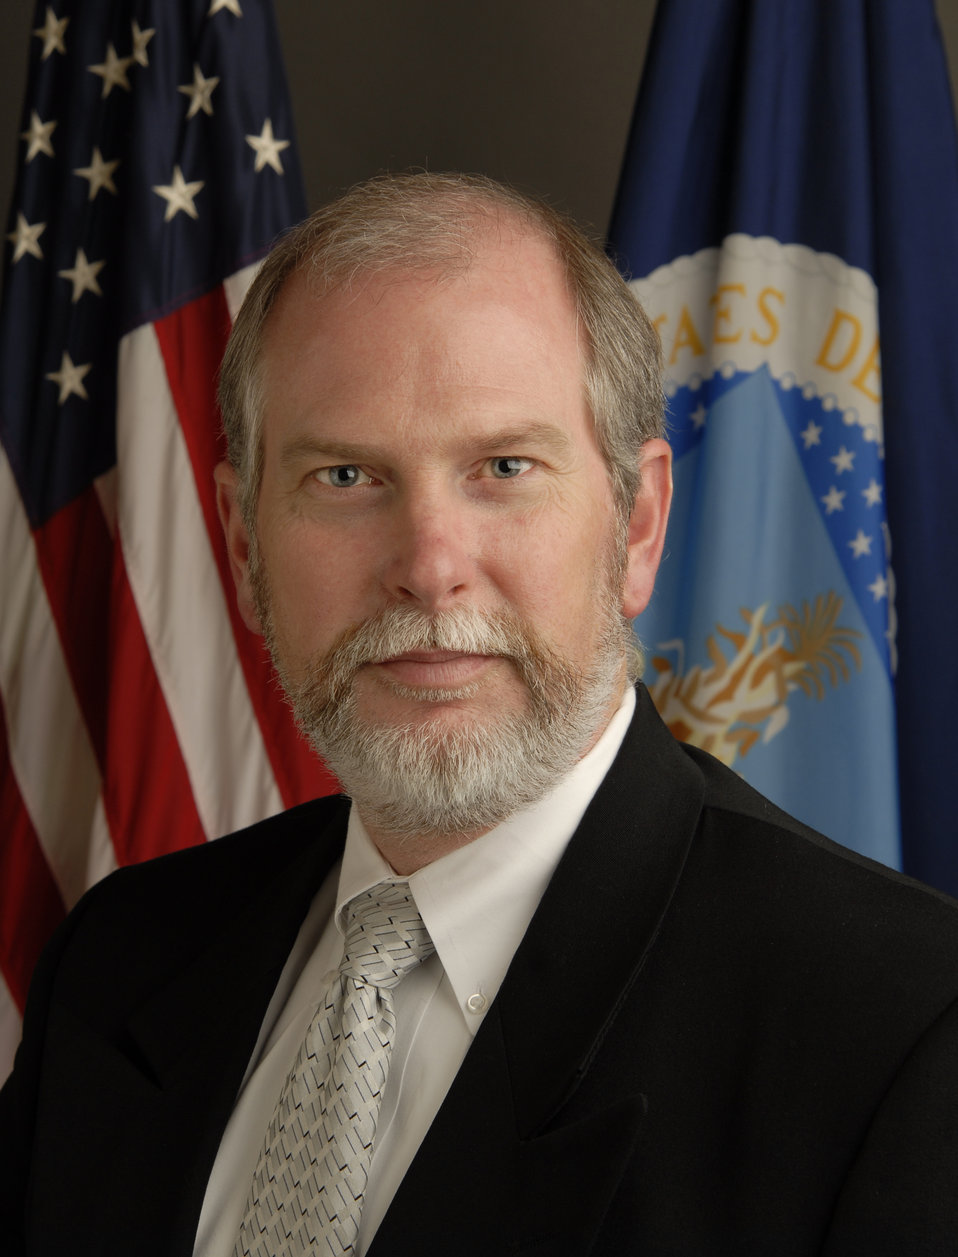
20120405-OO-KJH-0003 Director, Office of Homeland Security and Emergency Coordination Todd H. Repass, Jr.

Portrait of Todd H. Repass, Jr., Director, Office of Homeland Security and Emergency Coordination.